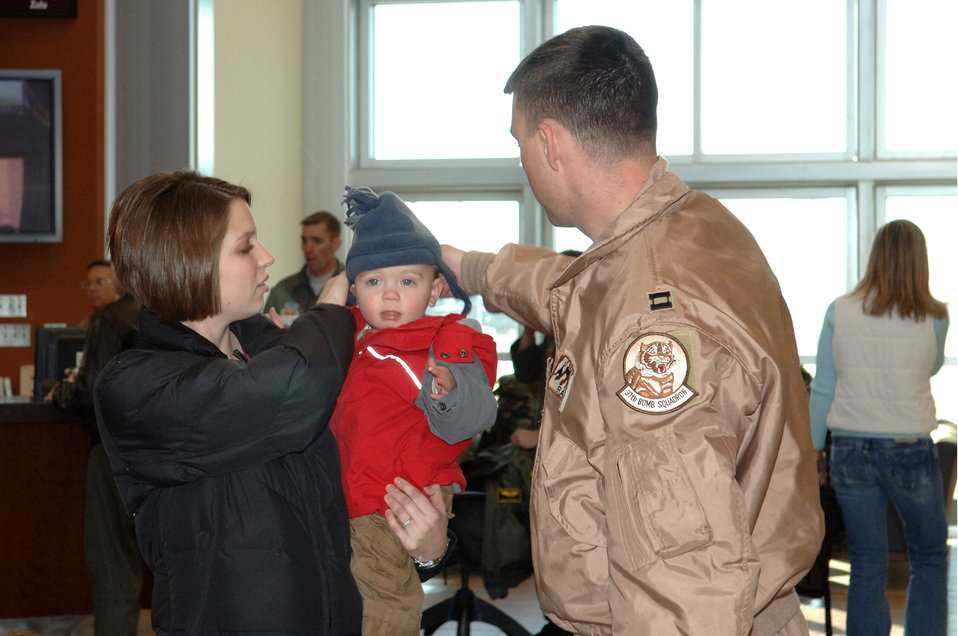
Pilots return to Ellsworth

Capt. Zack Stewart returns home from a five-month deployment to Southwest Asia and is welcomed by his wife and children Jan. 21 at Ellsworth Air Force Base, S.D. Captain Steward was deployed to Southwest Asia in support of operations Iraqi Freedom and Enduring Freedom. He is a B-1 Lancer pilot with the 28th Bomb Wing.